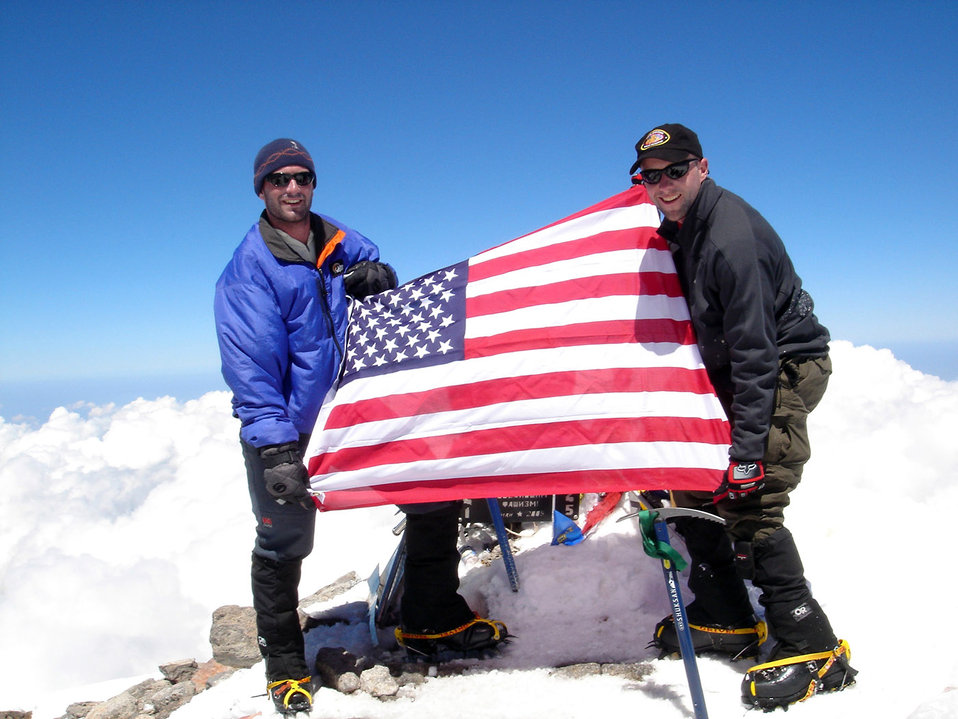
Only sky proves limit for 'mountain men'

MOUNT ELBRUS, Russia -- First Lt. Mark Uberuaga (left) and Capt. Rob Marshall proudly display the American flag after reaching the summit of Mount Elbrus. Lieutenant Uberuaga is assigned to the 21st Special Operations Squadron, and Captain Marshall is assigned to the 67th Special Operations Squadron. Both are from Royal Air Force Mildenhall, England.